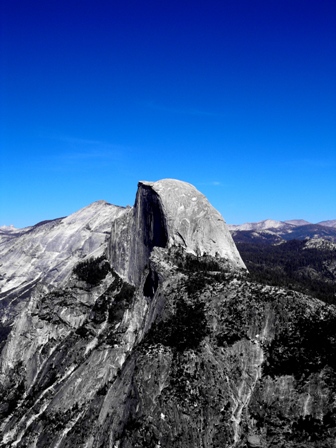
This is a view of Half Dome taken from the Glacier Point Apron on September 17th, 2006 by Enzo Christopher Njoo.